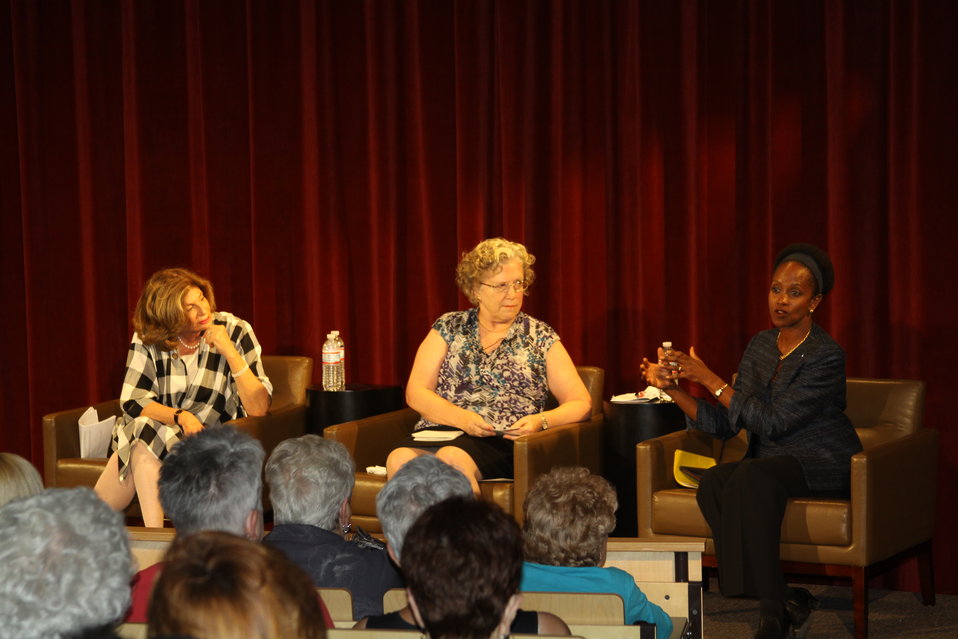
Assistant Secretary Brimmer Answers a Question

Assistant Secretary for International Organization Affairs Esther Brimmer answers a question during the panel event, “Shattering the Glass Ceiling: Empowering Women in Leadership, Diplomacy, and Government,” at the University of Nevada in Las Vegas on September 1, 2011. Also pictured: Nevada Congresswoman Shelley Berkley, left, and Dr. Joanne Goodwin, Director of the Women’s Research Institute of Nevada, center.